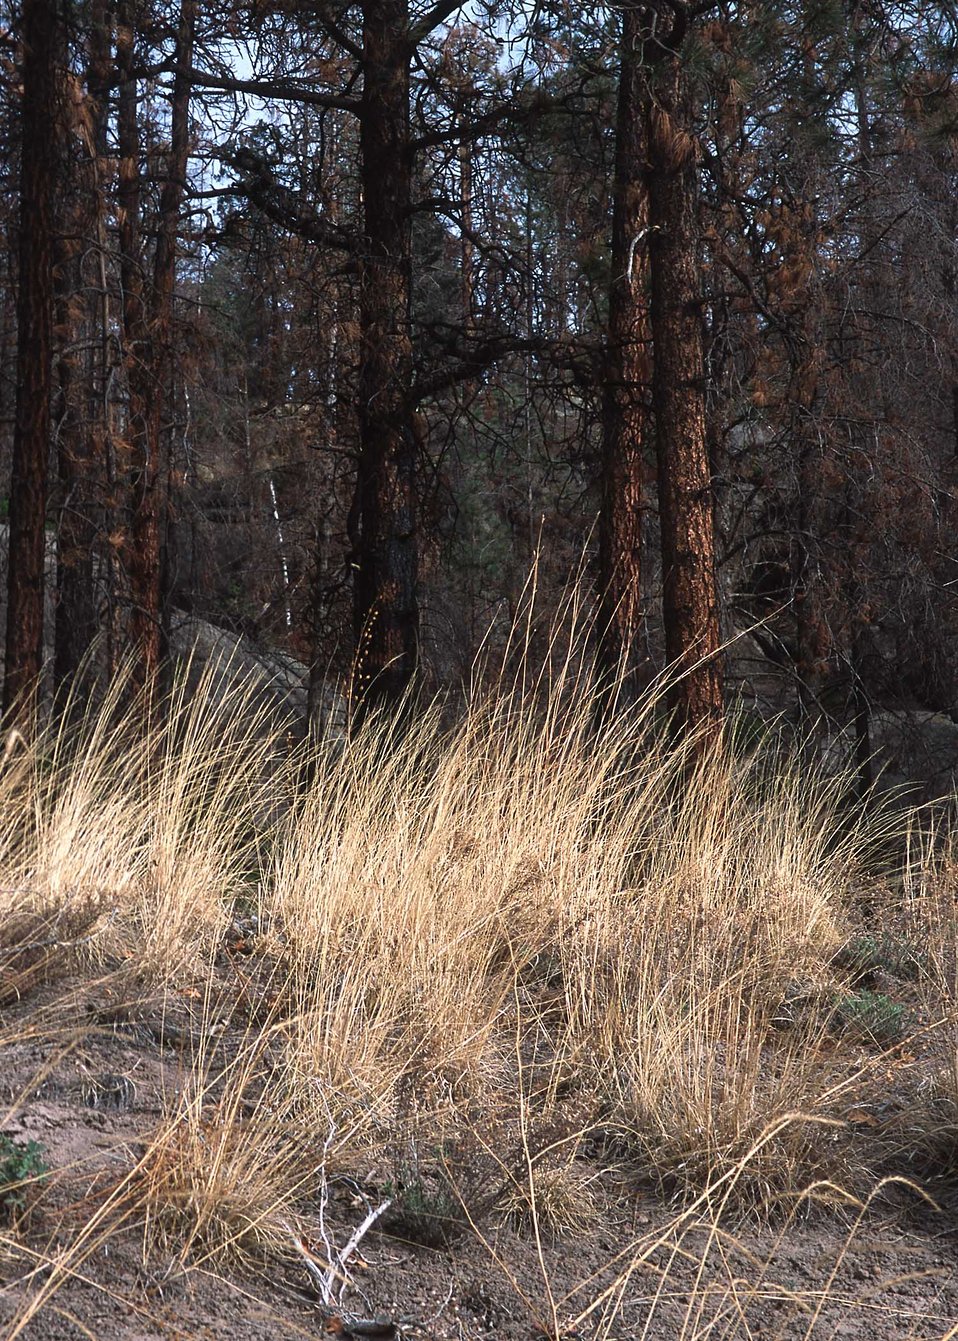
First years growth of emergency reseeding after the Los Alamos fires. Some of the species planted for erosion control and habitat improvement were prairie junegrass, slender wheatgrass, mountain brome, three awn, gambel's oak, and mountain mahogany.